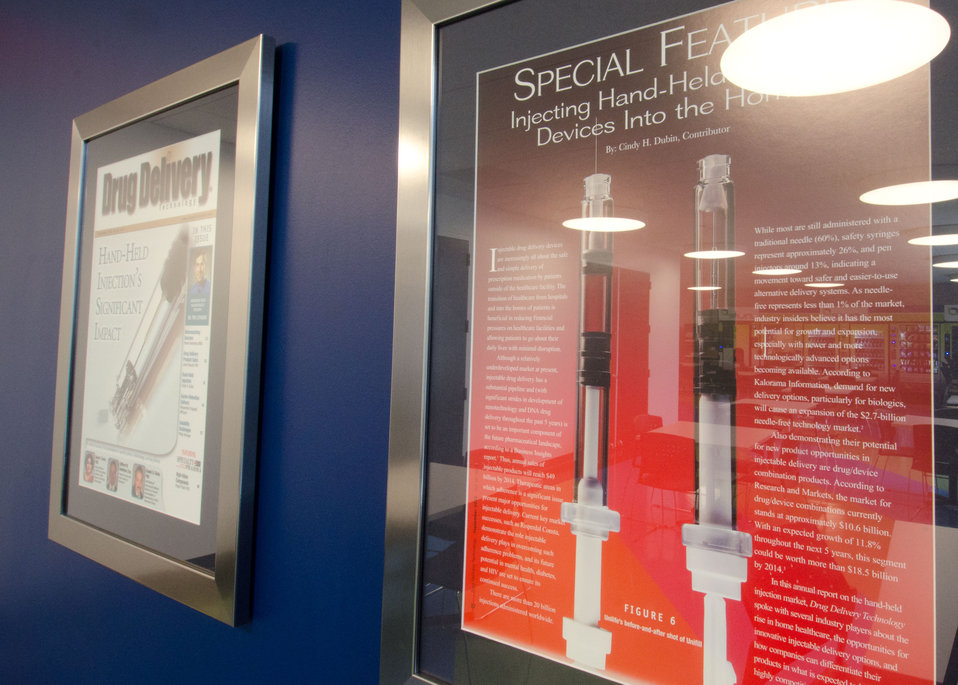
Product poster and one of their products featured on the cover of an industy publication, on display at Unilife, a medical device company focused on the design, development, manufacture and supply of a proprietary range of retractable syringes on Monday, April 20, 2011 in York, PA.. In partnership with Sanofi-aventis, Mikron Group, and MDMA, U.S. Department of Agriculture Rural Development was able to guarantee $18,000,000 through its Business and Industry Guaranteed Loan Program to construct a custom-built, global headquarters and commercial production facility in York, Pennsylvania. The 165,000 sq. ft. facility was completed in late 2010 and can accommodate future growth as well as the Company’s projected demand from pharmaceutical and healthcare companies for its proprietary range of Unifill ready-to-fill (prefilled) and Unitract general purpose safety syringes. Stage one of the facility is designed to accommodate the production of up to 400 million Unilife syringes per year and to meet stringent pharmaceutical standards for primary drug containers. Adjacent to the manufacturing facility is Unilife’s global headquarters that support administrative, marketing, new product development, quality laboratories and other operational functions. Unilife, which first arrived in Pennsylvania in 2006. The company has doubled its employees for the past three years. There are approximately 150 employees, and they expect to double the number by 2015.